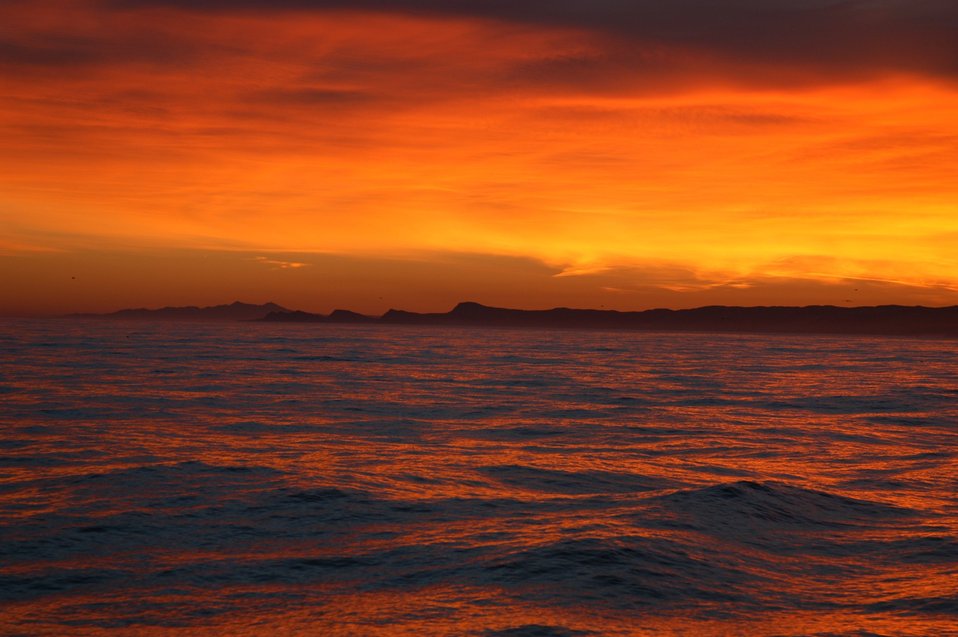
A magnificent sunrise looking east from San Miguel Island.